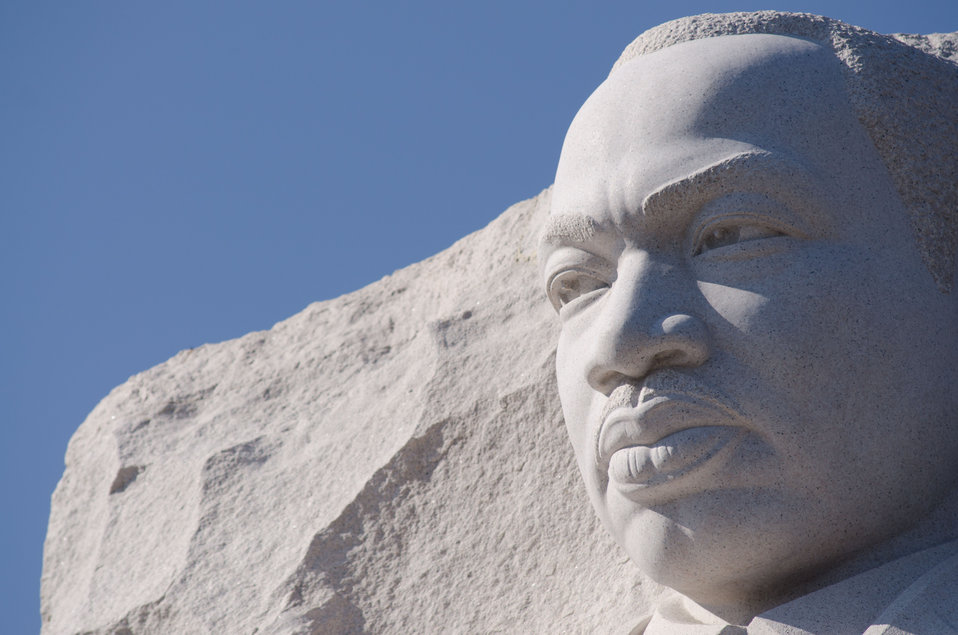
Martin Luther King, Jr. Memorial in Washington, DC, on Saturday, October 8, 2011.